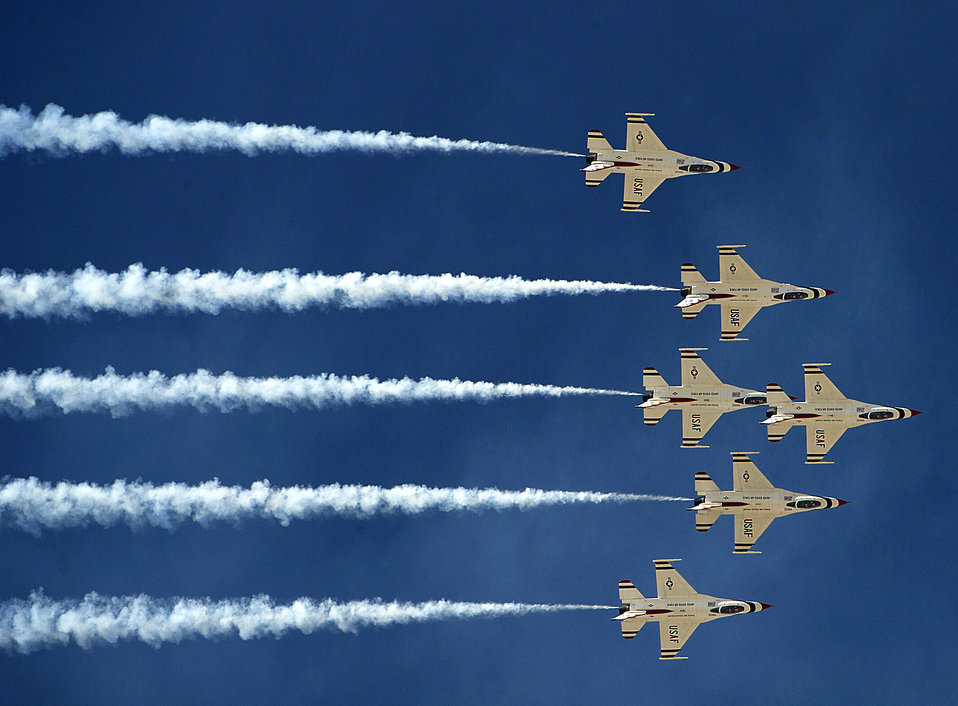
Wild blue yonder

-16 Fighting Falcons with the Thunderbirds, the U.S. Air Force aerial demonstration team, perform during the 2011 Legacy of Liberty Air Show on Oct. 8, 2011, at Holloman Air Force Base, N.M.